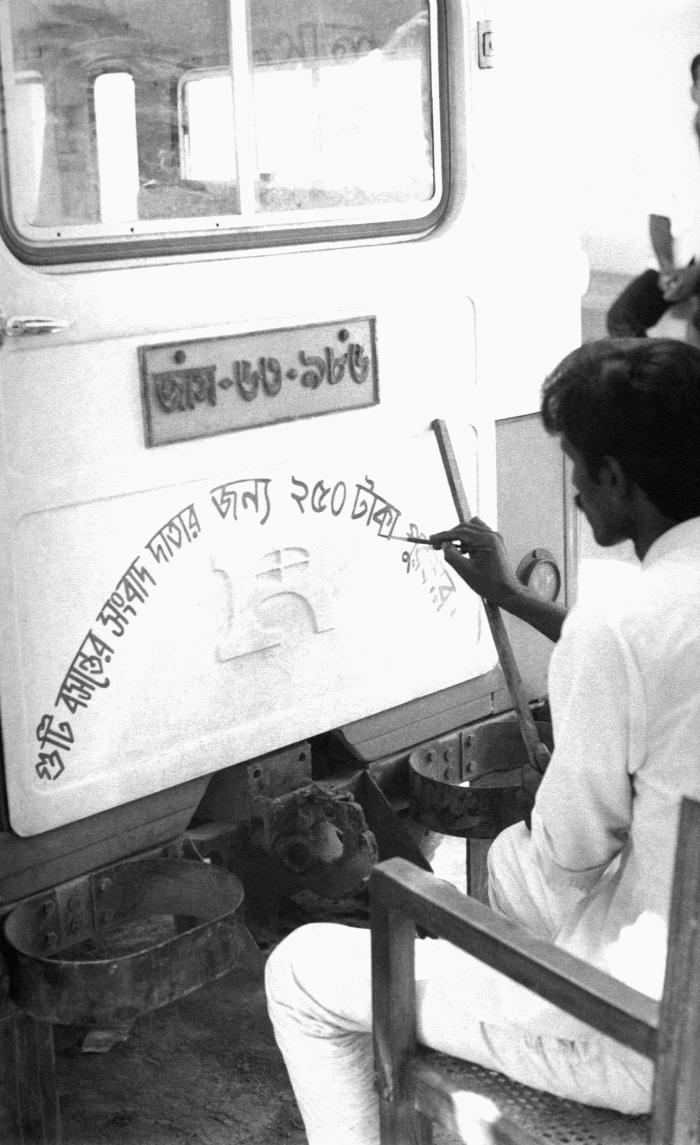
This 1975 photograph depicted a sign painter as he was painting the reward notification on the back of a truck. By painting this, and at times other forms of information, on a moving vehicle, it increased the chances for residents to see these messages. This reward message was announcing the 250 Taka reward that would be paid to anyone who'd report a confirmed smallpox case to local authorities. The smallpox eradication team employed its own sign painter on a full time basis who painted messages on their vehicles.